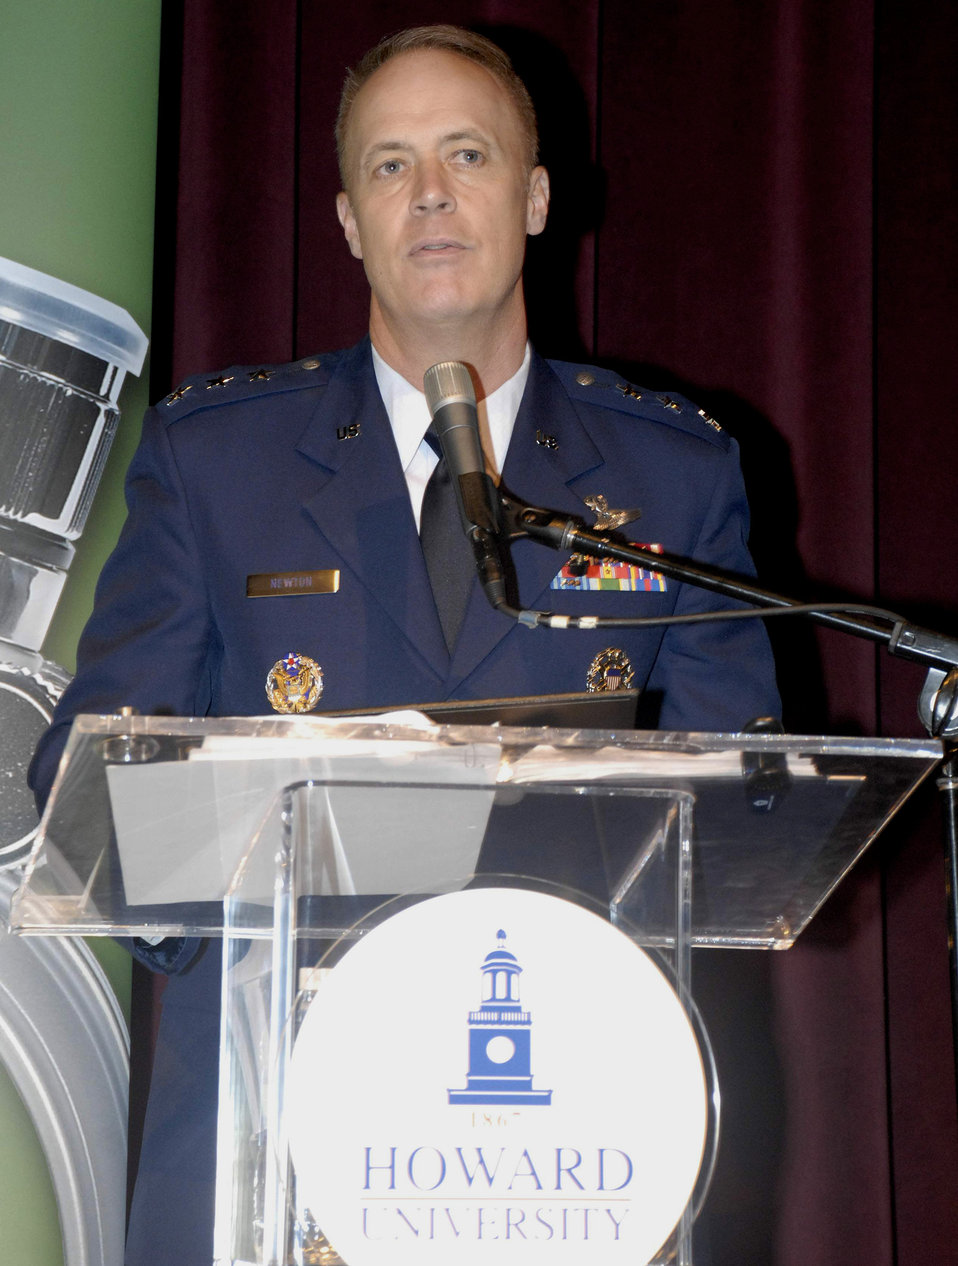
Air Force named among top HBCU supporters

Lt. Gen. Richard Y. Newton III, deputy chief of staff for manpower and personnel, addresses faculty, students and business leaders May 29 at Howard University here after receiving an award on behalf of the Air Force which was named among the